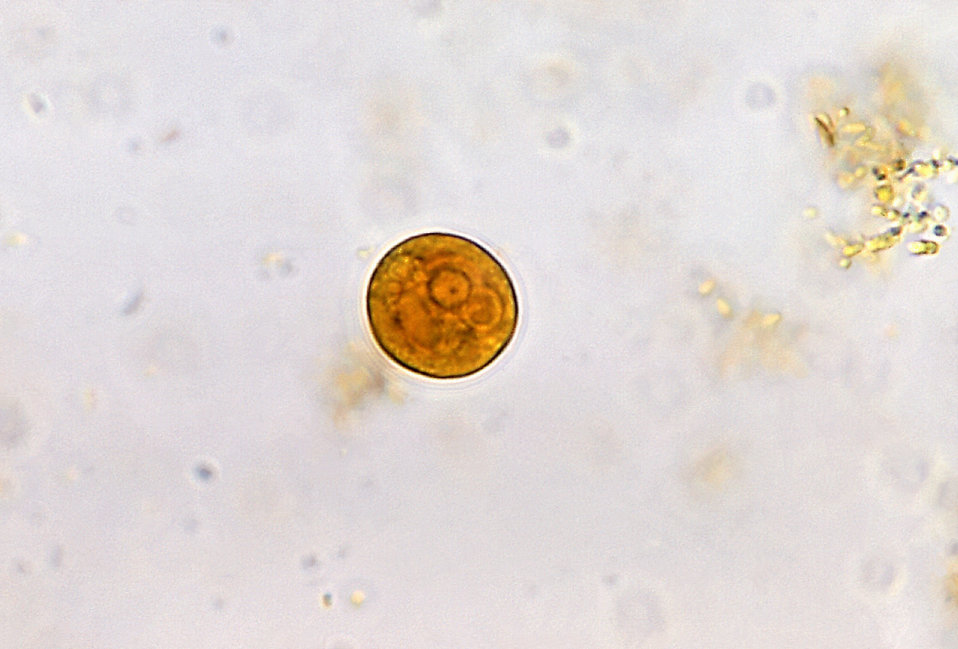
Entamoeba histolytica cyst.